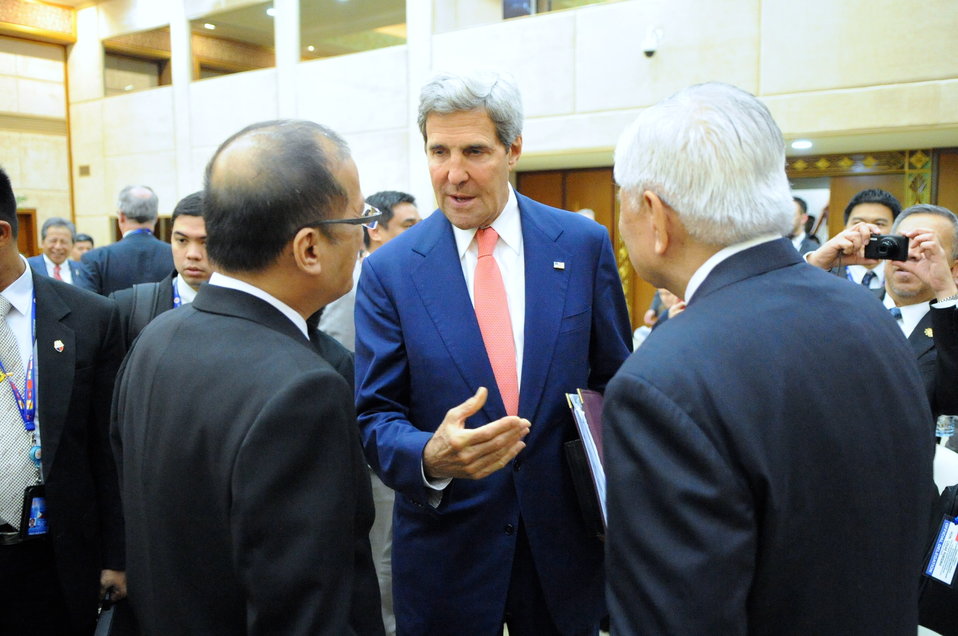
Secretary Kerry Meets With Philippine President Aquino of the Philippines

U.S. Secretary of State John Kerry shakes hands with President Benigno S. Aquino of the Philippines on October 10, 2013, in Bandar Seri Begawan, Brunei, after apologizing for postponing his visit to Aquino's country because of an approaching typhoon.